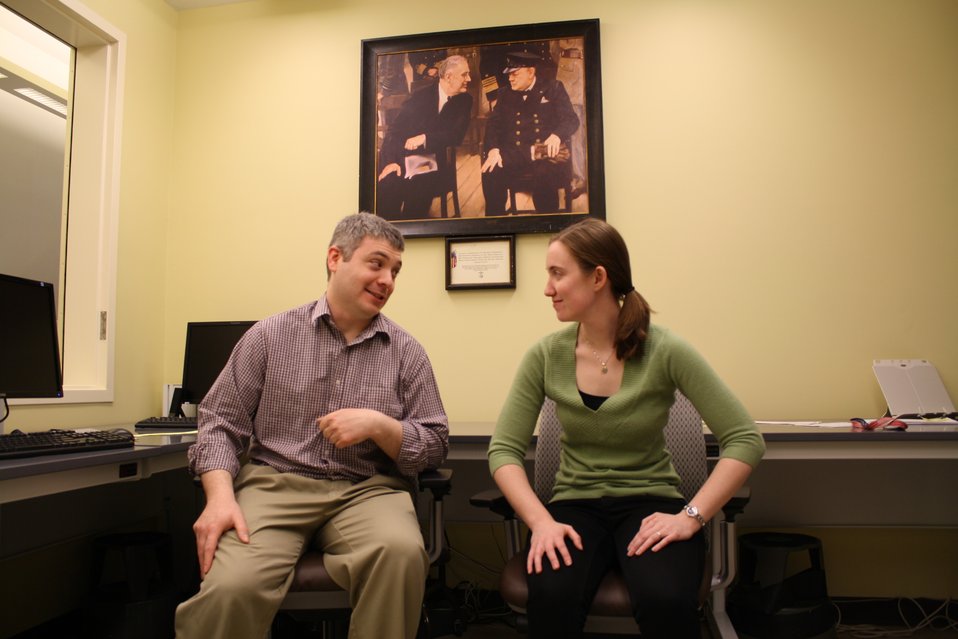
LP-FDR Archivists Matt Hanson and Sarah Malcolm channel the collaborative spirit of Franklin Roosevelt and Winston Churchill in the Library's 'Innovation Lab.'; Location: Franklin D. Roosevelt Presidential Library - Innovation Lab, Hyde Park, New York